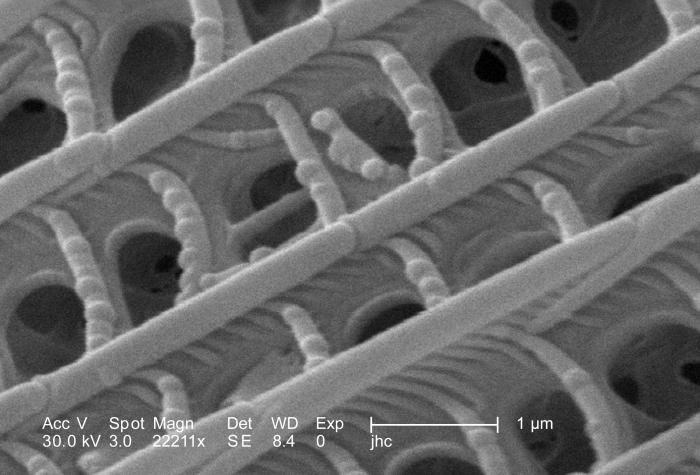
Under an even higher magnification than PHIL 9850, enlarged 22211X this scanning electron micrographic (SEM) view, allows one to more fully appreciate the diaphanous construct of a single scale, which was found on a white moth's exoskeletal surface. See PHIL 9841 through 9850 for other views of this insect's scales. Here, the light-weight structure of the scale was made quite evident, which acted to reduce the moth's overall weight, thereby, further facilitating the insect's ability to fly.This moth, discovered deceased in the Decatur, Georgia suburbs, was a member of the Phylum Arthropoda, Order Lepidoptera.